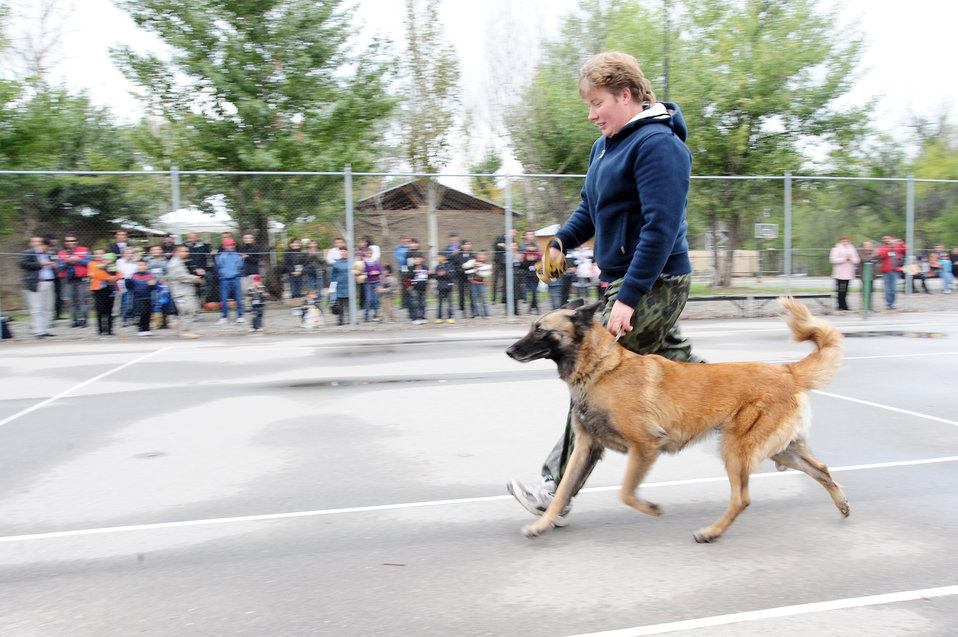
Airmen host Kyrgyz citizens during family day

Kyrgyzstan State Security Service K-9 Unit Chief Maj. Natalia Balabrikova displays techniques with her dog, Volia, for an audience during Friends and Family Day Oct. 9, 2009, at the Transit Center at Manas, Kyrgyzstan. The event strengthened friendships between the U.S. military and the local community.